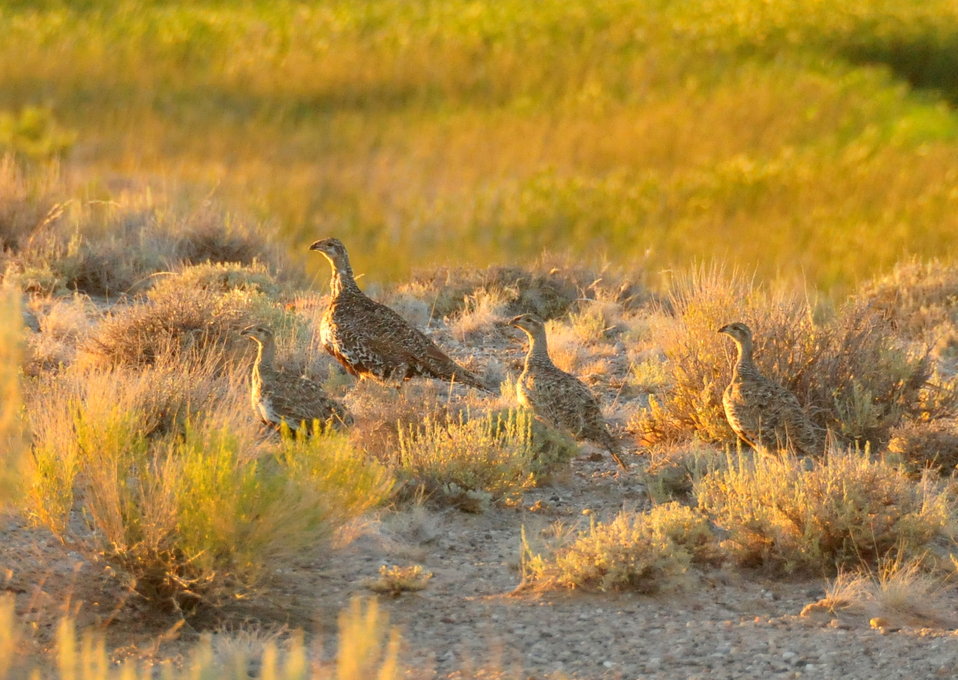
Sage-grouse Hen and her Brood on Seedskadee NWR

A hen sage grouse leads her brood from wetlands to a night roost in sagebrush on Seedskadee NWR.